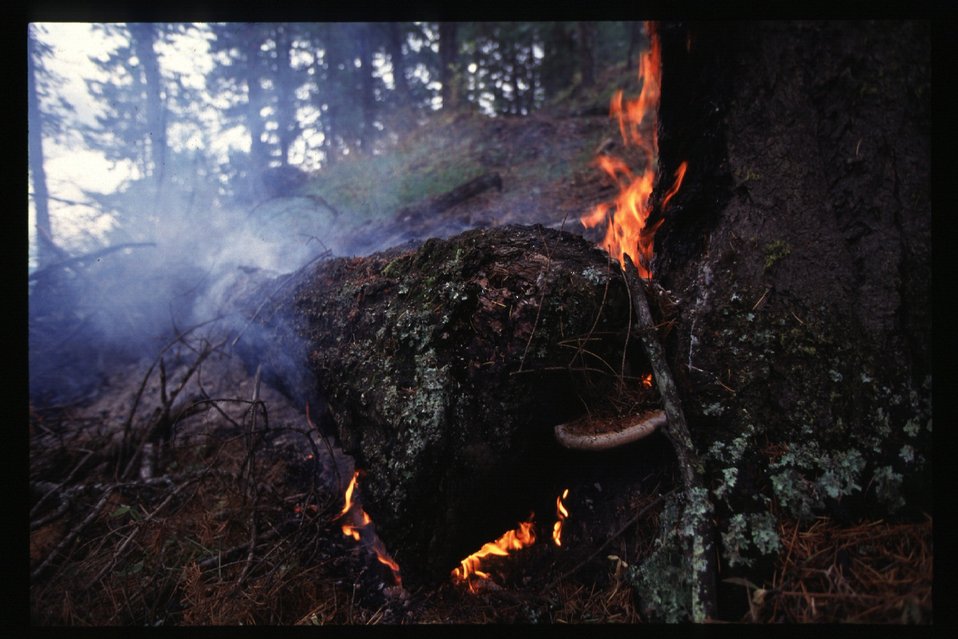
Couer D'Alene Mineral Ridge Trail Prescribed Burn Recreation Shoshone Field Office USRD Upper Snake River District